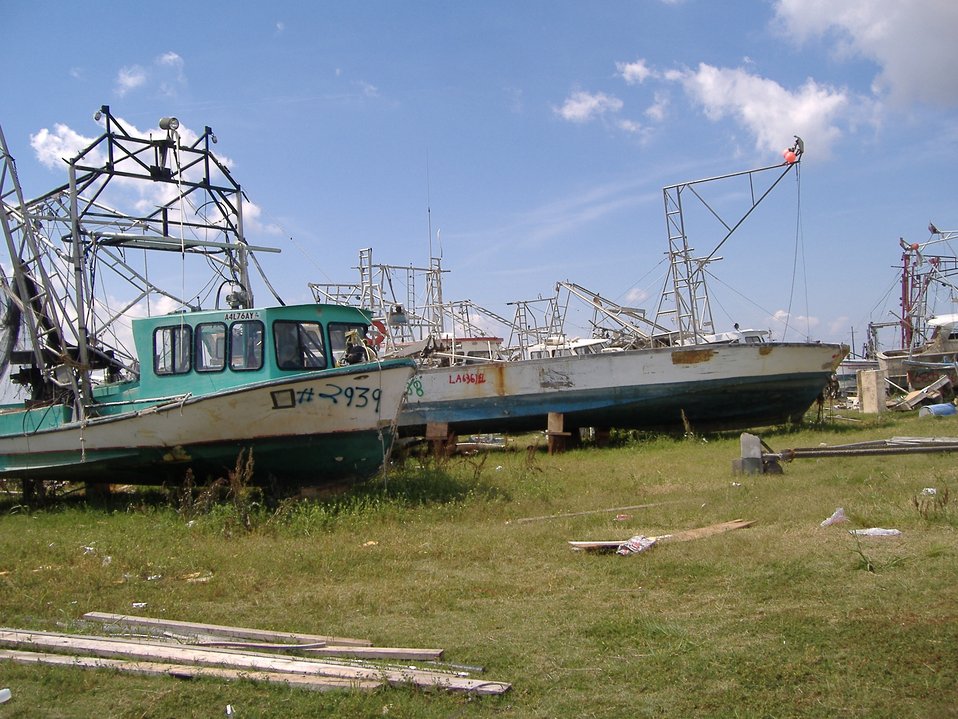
The aftermath of Katrina. Recovering and fixing the boats.